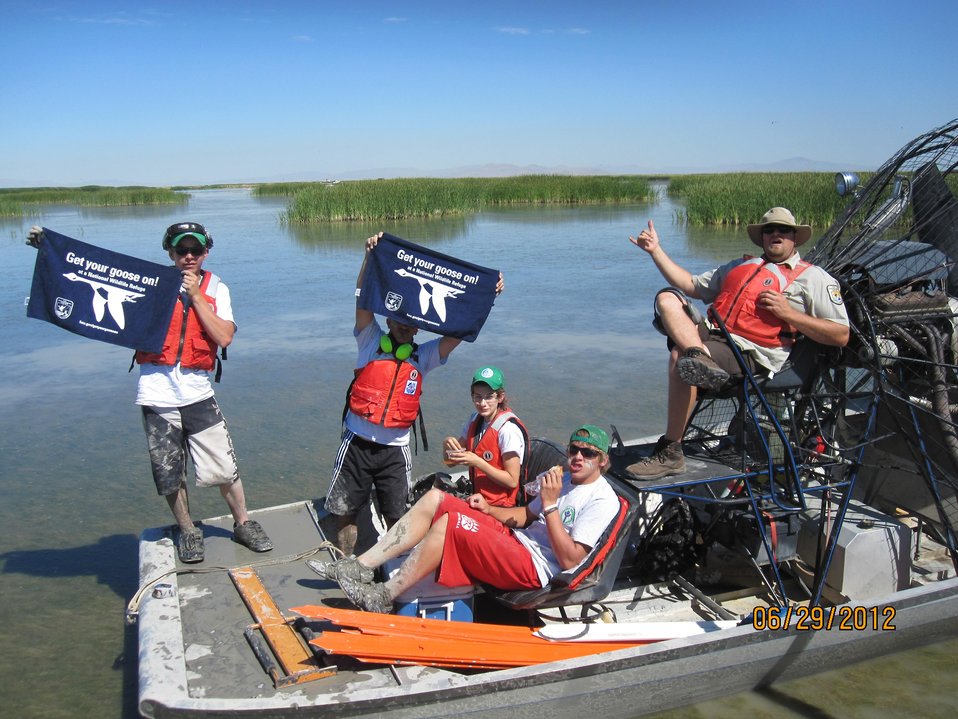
Get Your Goose On!

Youth Conservation Corps (YCC) workers at Bear River Migratory Bird Refuge 'get their goose on' while taking a break on a USFWS airboat.